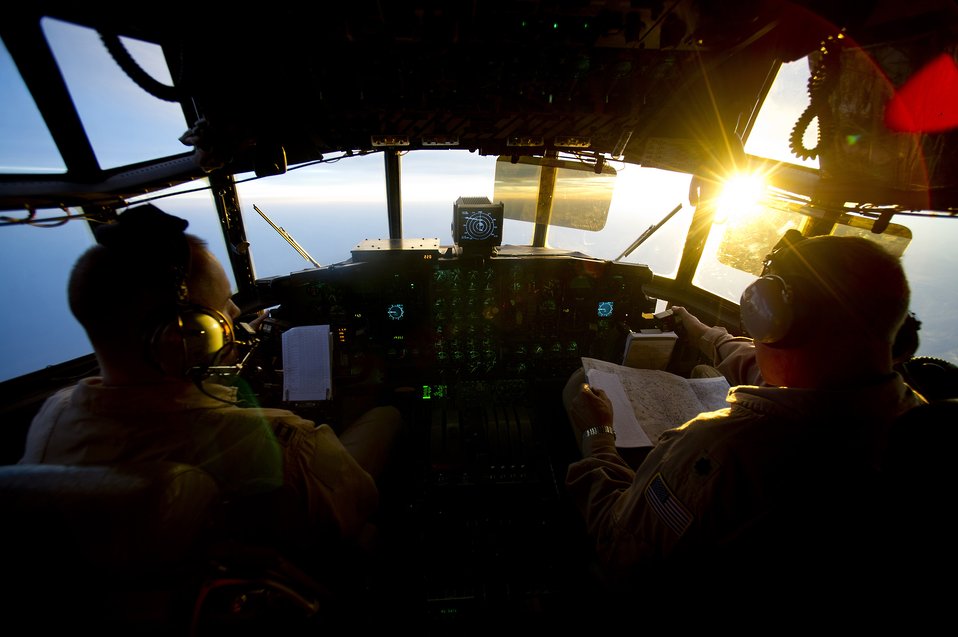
Good day to fly

Capt. Trent Gilmore (left) and Lt. Col Donald Langiewicz fly a C-130 Hercules March 31, 2011, in support of Combined Joint Task Force-Horn of Africa. Captain Gilmore and Colonel Langiewicz are assigned to the 746th Expeditionary Airlift Squadron, which is stationed at an air base in Southwest Asia.